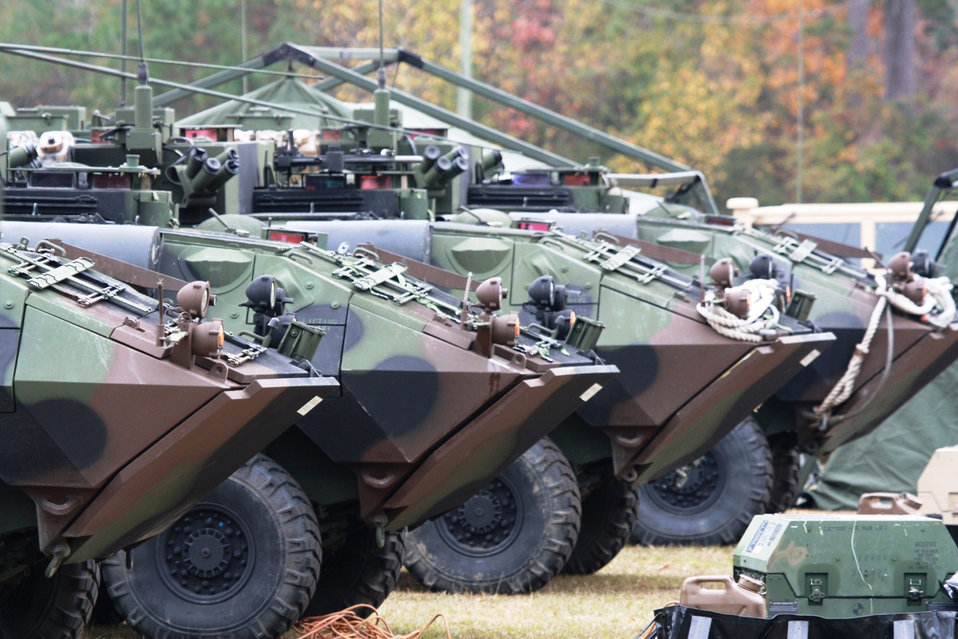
LAVs

Marine Light Armored Vehicles were used as part of the command and control structure employed at exercise Spartan Resolve.